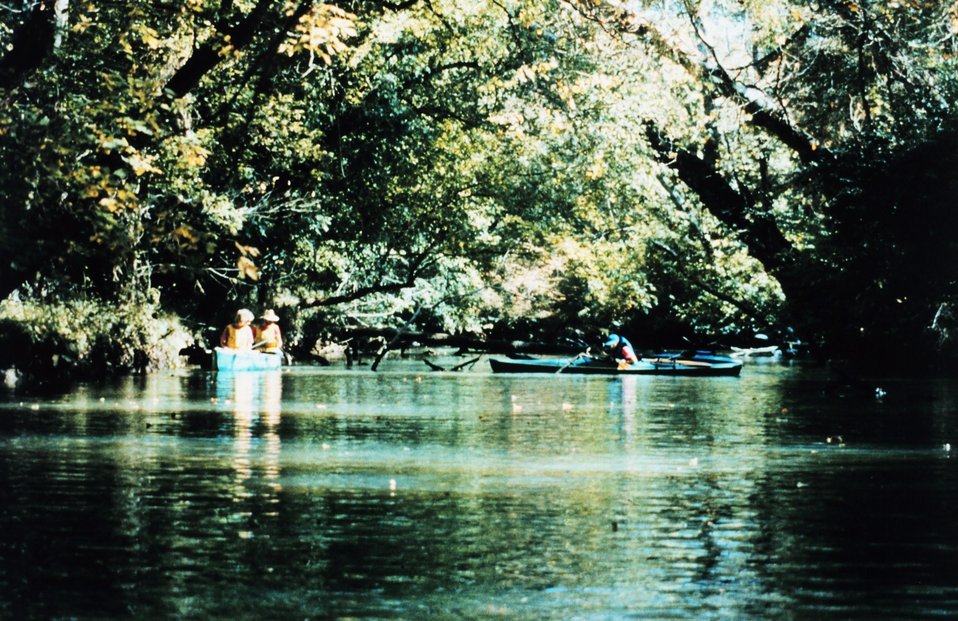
Canoers and kayakers enjoying an idyllic early fall afternoon on a quiet tree-lined stretch of the upper Patuxent River.